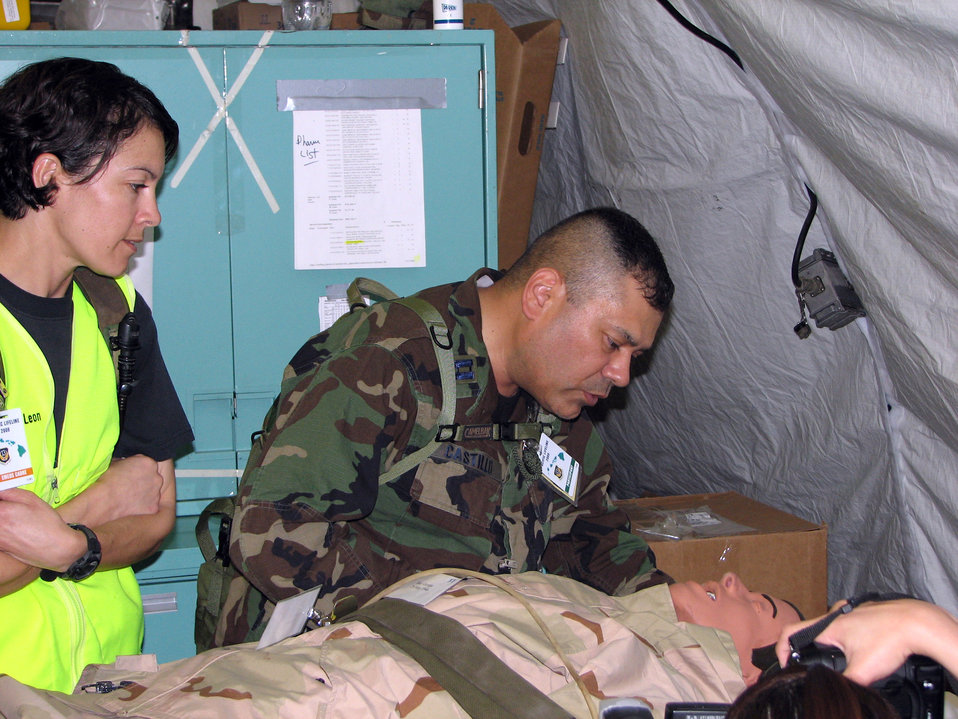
Pacific Lifeline tests humanitarian relief concept

Chaplain (Capt.) Paul Castillo consoles a simulated patient while receiving injects from Tech. Sgt. Belen DeLeon during a mass casualty exercise Feb. 4 the Kona International Airport in Kona, Hawaii. Chaplain Castillo deployed to the Kona International Airport to participate in exercise Pacific Lifeline from Andersen Air Force Base, Guam. Chaplain Castillo is a protestant chaplain assigned to the 36th Wing from Andersen AFB, and Sergeant DeLeon is an Air Force School of Aerospace Medicine instructor from Brooks City-Base, Texas.